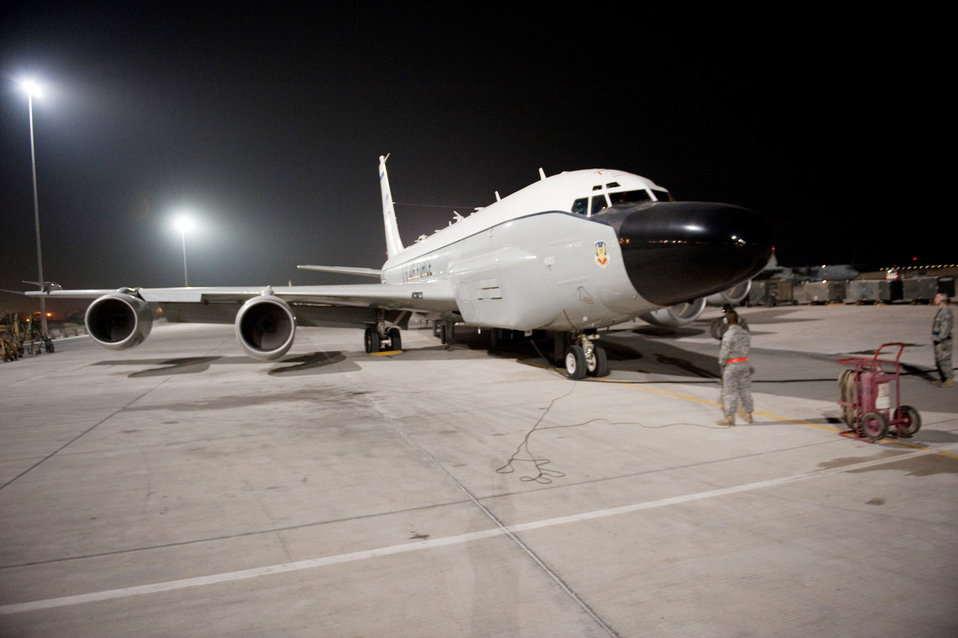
Unit surpasses consecutive 7,000 days with forces in Southwest Asia

Airmen from the 55th Aircraft Maintenance Unit recover a RC-135V/W Rivet Joint Oct. 7, 2009, at an air base in Southwest Asia. RC-135V/Ws deployed to Southwest Asia met a 7,000 consecutive day milestone Oct. 7 in the U.S. Central Command area of responsibility. The squadron provides commanders near real-time on-scene intelligence collection, analysis and dissemination in support of operations Iraqi Freedom and Enduring Freedom.